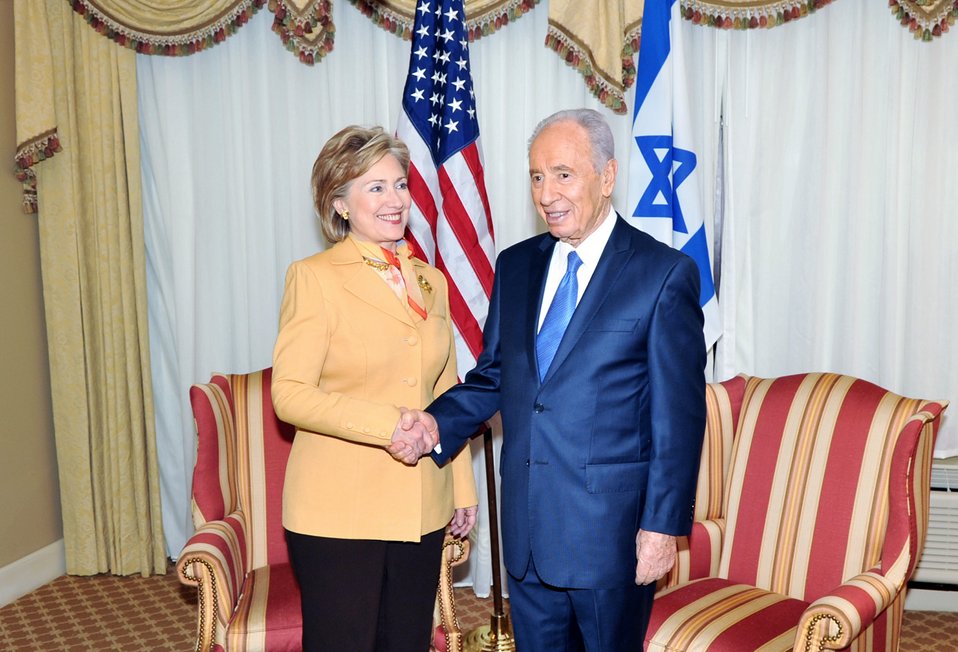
Secretary Clinton Meets With Israeli President

U.S. Secretary of State Hillary Rodham Clinton attends a bilateral meeting with President Shimon Perez of Israel at the Omni Shoreham Hotel in Washington, DC May 5, 2009.